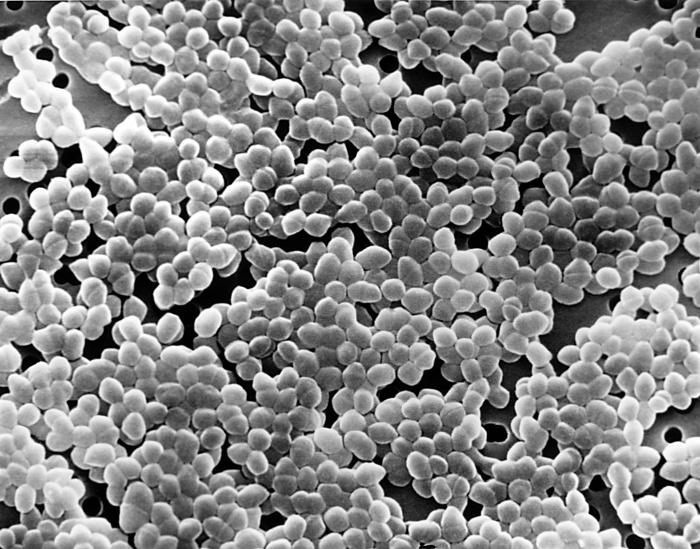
This scanning electron micrograph (SEM) depicted large numbers of Gram-positiveEnterococcus sp. bacteria.